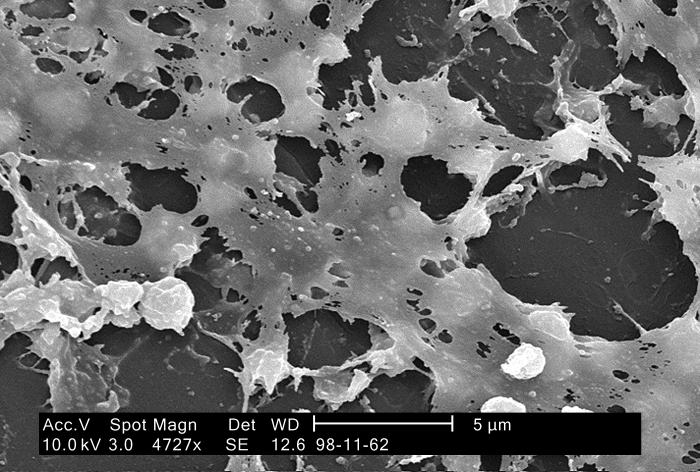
This highly magnified electron micrograph depicted numbers of Staphylococcus aureus bacteria, which were fond on the luminal surface of an indwelling catheter. Of importance is the sticky-looking substance woven between the round cocci bacteria, which was composed of polysaccharides, and is known as 'biofilm'. This biofilm has been found to protect the bacteria that secrete the substance from attacks by antimicrobial agents such as antibiotics; Magnified 2363x.S. aureus, often referred to simply as "staph," are bacteria commonly carried on the skin, or in the nose of healthy people. Approximately 25% to 30% of the population is colonized, i.e., when bacteria are present, but not causing an infection, in the nose with staph bacteria.